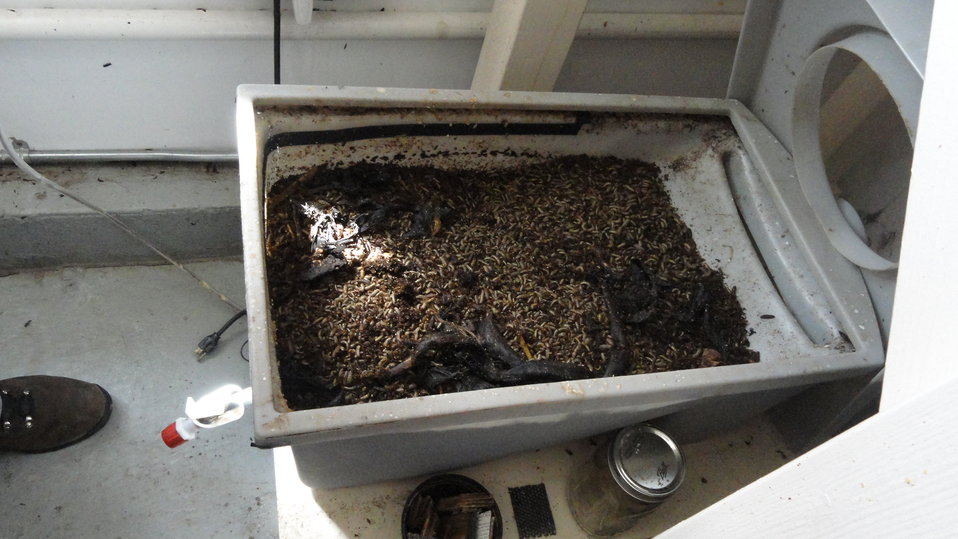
Visiting Saratoga National Fish Hatchery

In April of 2014, regional office employees visited Saratoga National Fish Hatchery to learn more about its efforts towards recovering the Wyoming toad (Bufo baxteri).

The hatchery adopted a unique role in becoming the first unit in the National Fish Hatchery System to become involved in rearing endangered amphibians. The Wyoming toad was a common sight on areas of the Laramie Plains, Albany County, Wyoming, into the early 1970s but the species' populations crashed in the mid-1970s. The Wyoming toad was listed as endangered by the U.S. Fish & Wildlife Service in January 1984. Found only in southwestern Wyoming, the Wyoming toad is considered the most endangered amphibian in North America. The hatchery maintains a captive population for breeding, rearing, and refugia, and the offspring from this program will be used for reintroduction efforts.